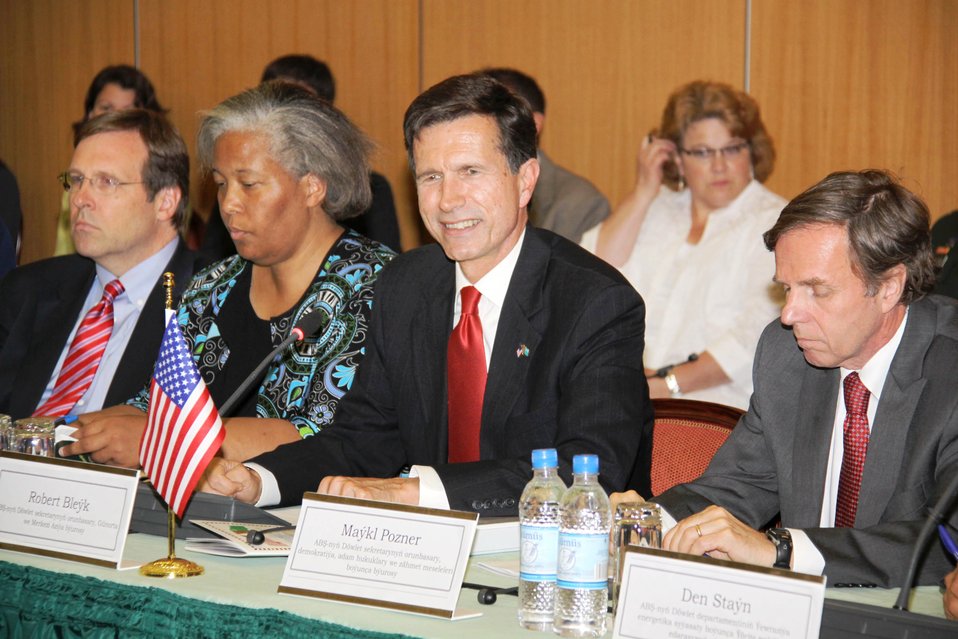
Assistant Secretary Blake, Assistant Secretary Posner, and Chargé d'Affaires Sylvia Curran Participate in the Opening of the Annual Bilateral Consultations (ABCs)

U.S. Assistant Secretary of State for South and Central Asian Affairs Robert O. Blake, U.S. Assistant Secretary for Democracy, Human Rights and Labor Michael H. Posner, and U.S. Embassy Ashgabat in Turkmenistan, Chargé d'Affaires Sylvia Curran participate in the opening of the Annual Bilateral Consultations (ABCs) between the Government of Turkmenistan and the Government of the United States in Ashgabat, Turkmenistan, on June 14, 2010.